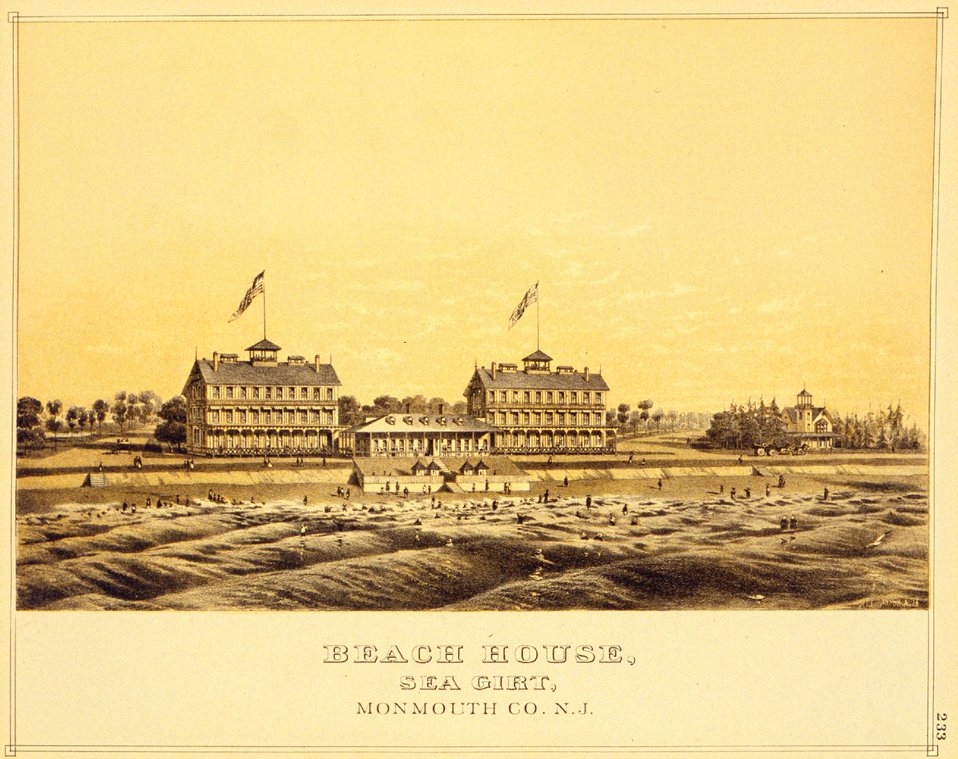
Beach House, Sea Girt, Monmouth County, New Jersey. P. 233. 'Historical and Biographical Atlas of the New Jersey Coast,' by T. F. Rose, 1878.